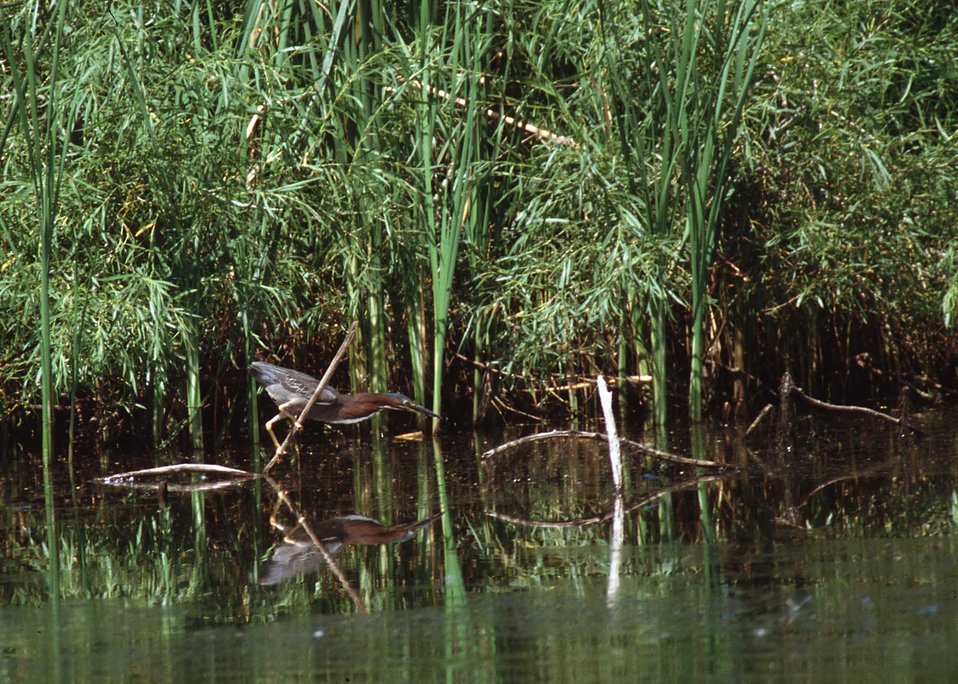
Green heron in a pothole wetland.